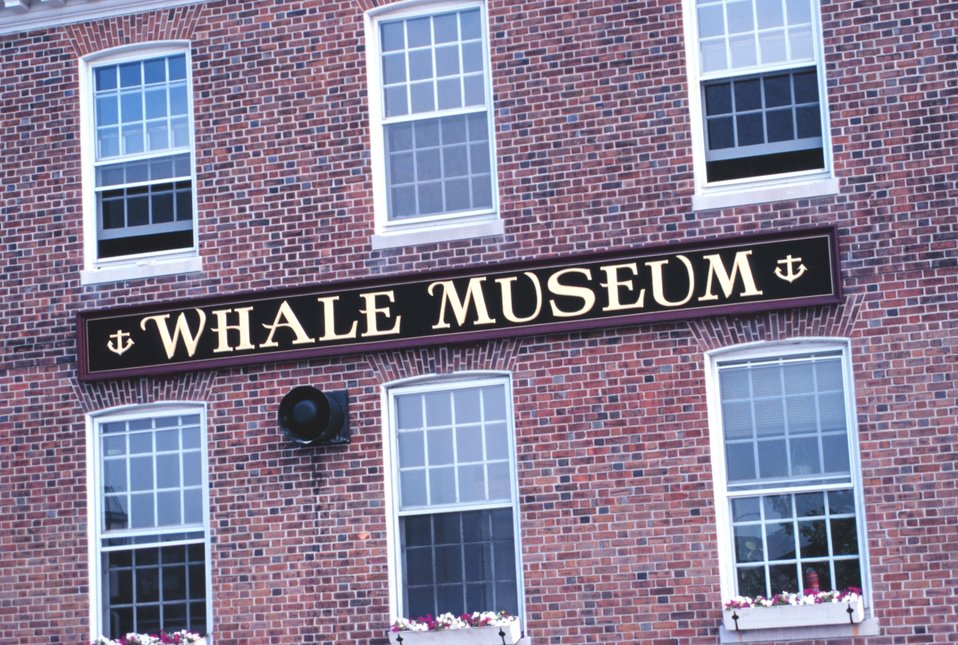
The Whale Museum